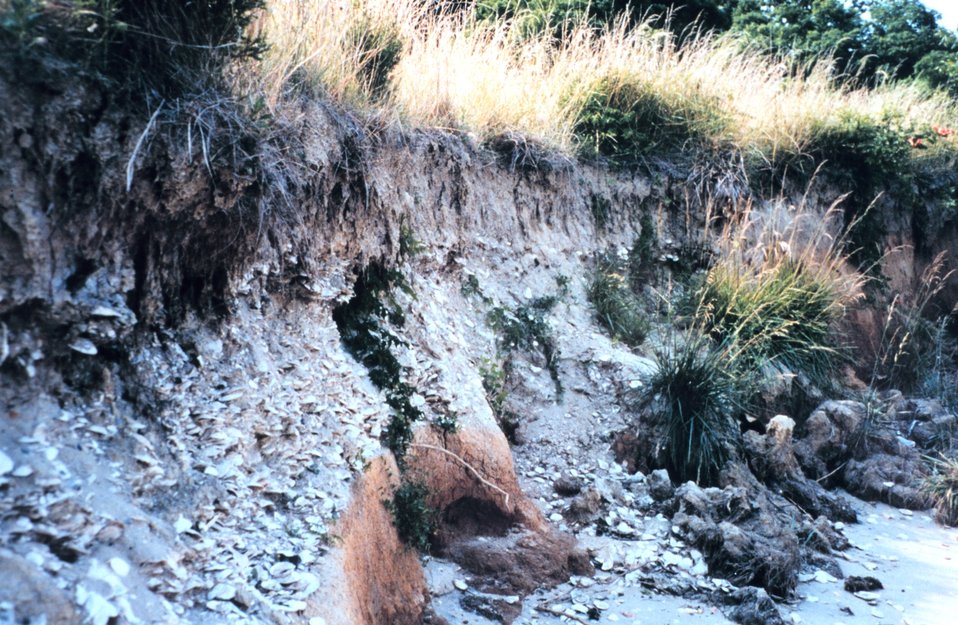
Eroded cliffs along the Tred Avon River reveal buried piles of oyster shells.